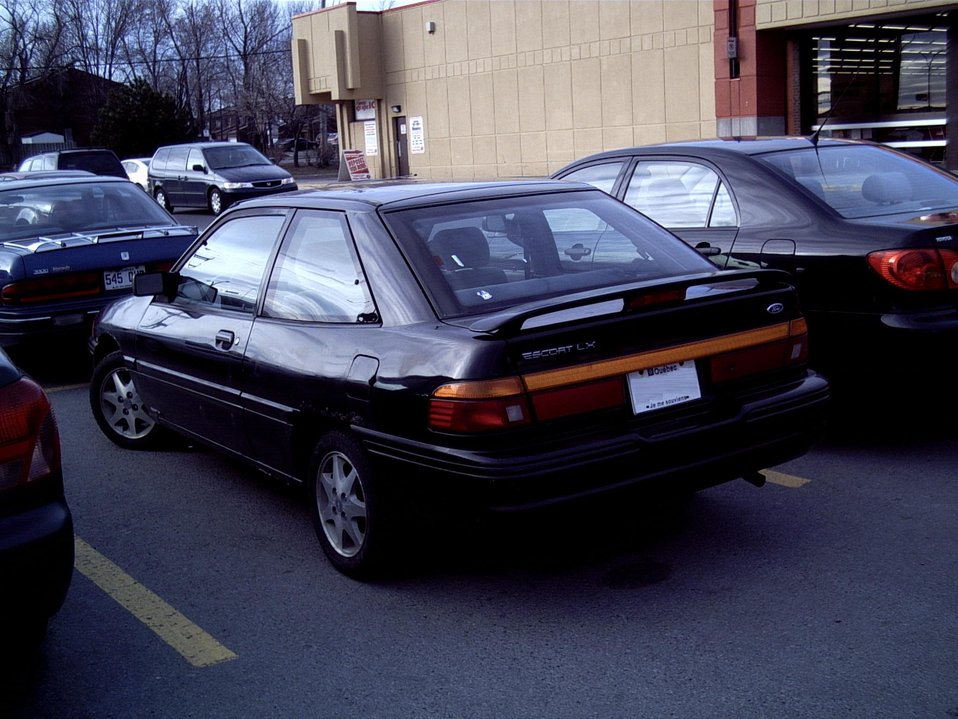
Ford Escort hatchback, 90s version.